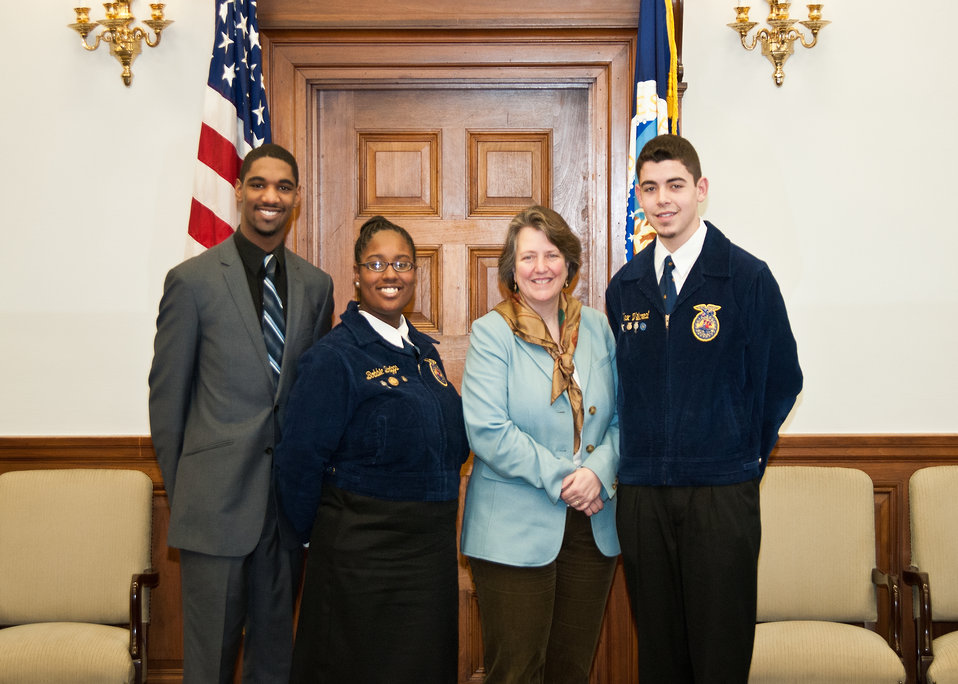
From left: Dantrell Cotton, University of Wisconsin, Bobbie Briggs, Chicago High School for Agricultural Science, Dr. Kathleen Merrigan, Agriculture Deputy Secretary and Alex Villareal, Chicago High School for Agricultural Science. Deputy Secretary Merrigan discussed the role of agricultural research with the students at the United States Department of Agriculture in Washington, D.C., Tuesday, January 10, 2012.